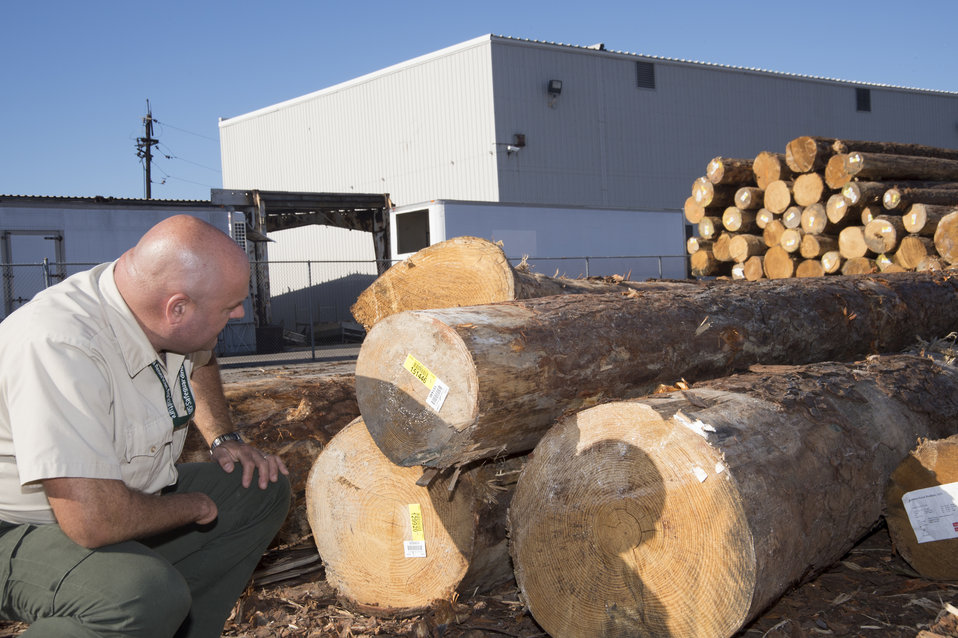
U.S. Department of Agriculture’s (USDA) Animal and Plant Health Inspection Service (APHIS) employee inspects fumigated logs near the Port of New Orleans in New Orleans, LA on Wednesday, Nov. 20, 2013. The fumigation process prevents the spread of any bacteria or insect that might cause harm to a foreign country’s agriculture.